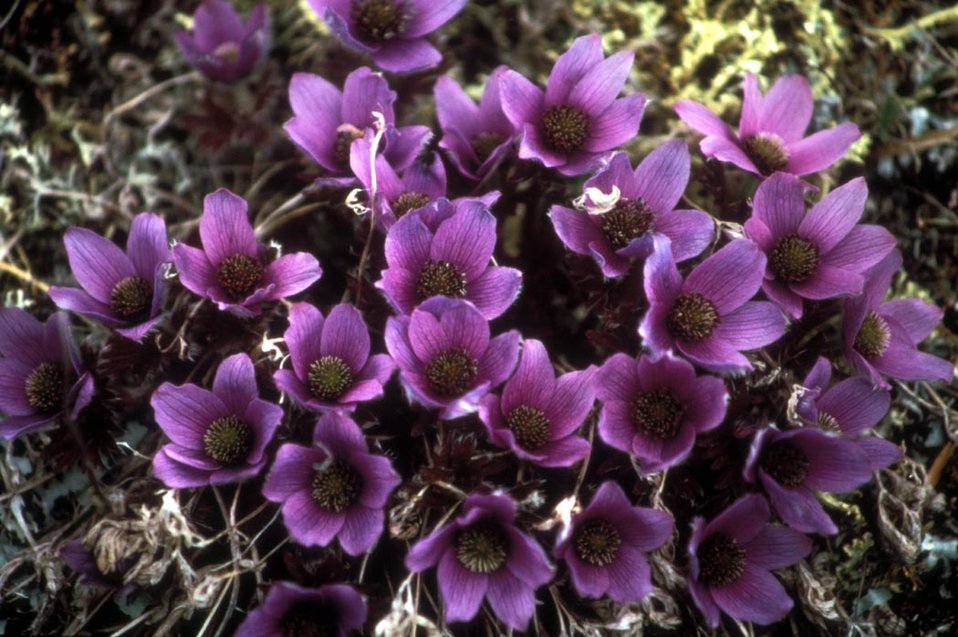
Alpine Anemone.